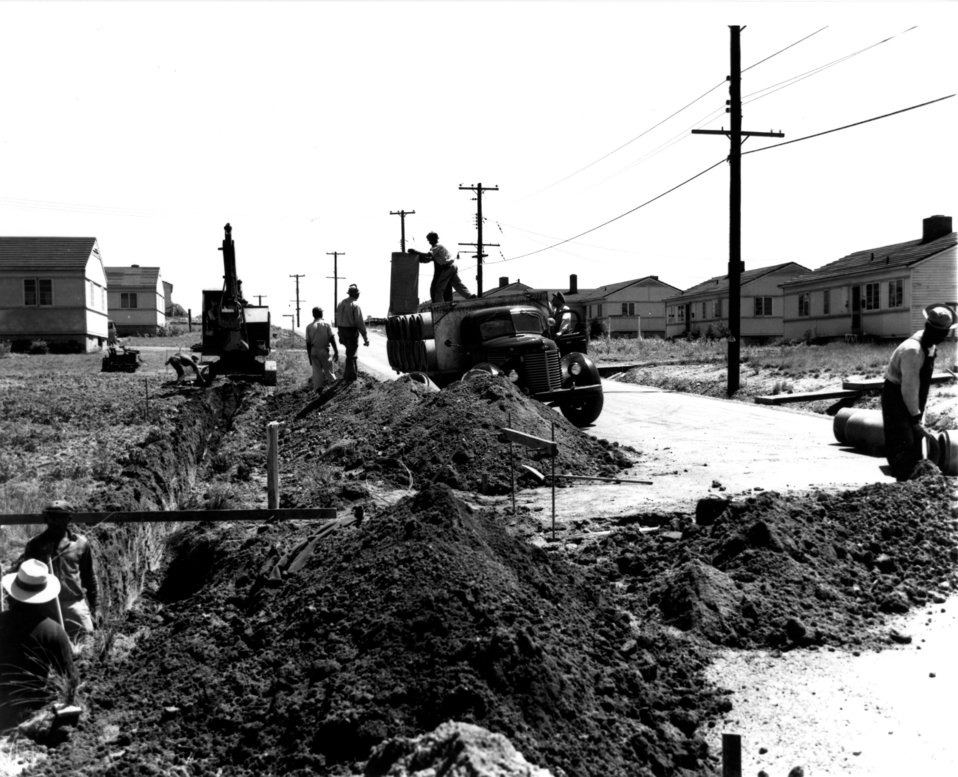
Construction activity at Oak Ridge